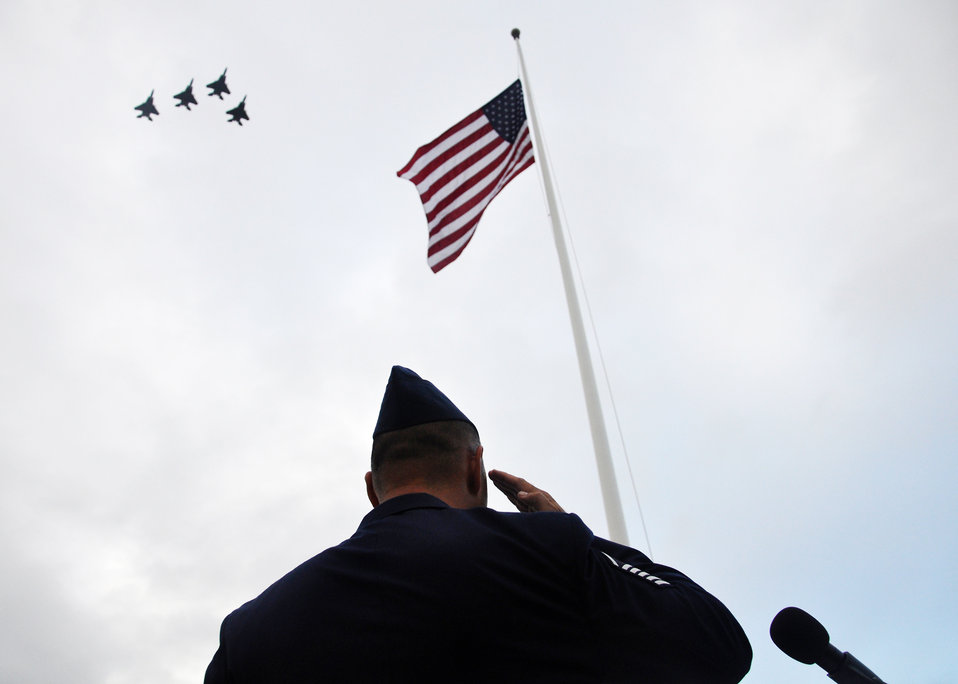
Hickam pays tribute to Airmen's storied legacy

Master Sgt. John Sieh salutes the flag as F-15 Eagles fly a missing man formation Dec. 7, 2009, during the 68th Remembrance Ceremony at Hickam Air Force Base, Hawaii. The ceremony marked the anniversary of the Dec. 7, 1941, attacks on Pearl Harbor Navy fleet and the Army Air Corps fields of Hickam, Wheeler and Bellows. Sergeant Sieh is from the 15th Airlift Wing protocol office and the F-15s are from the 199th Fighter Squadron, Hawaii Air National Guard.